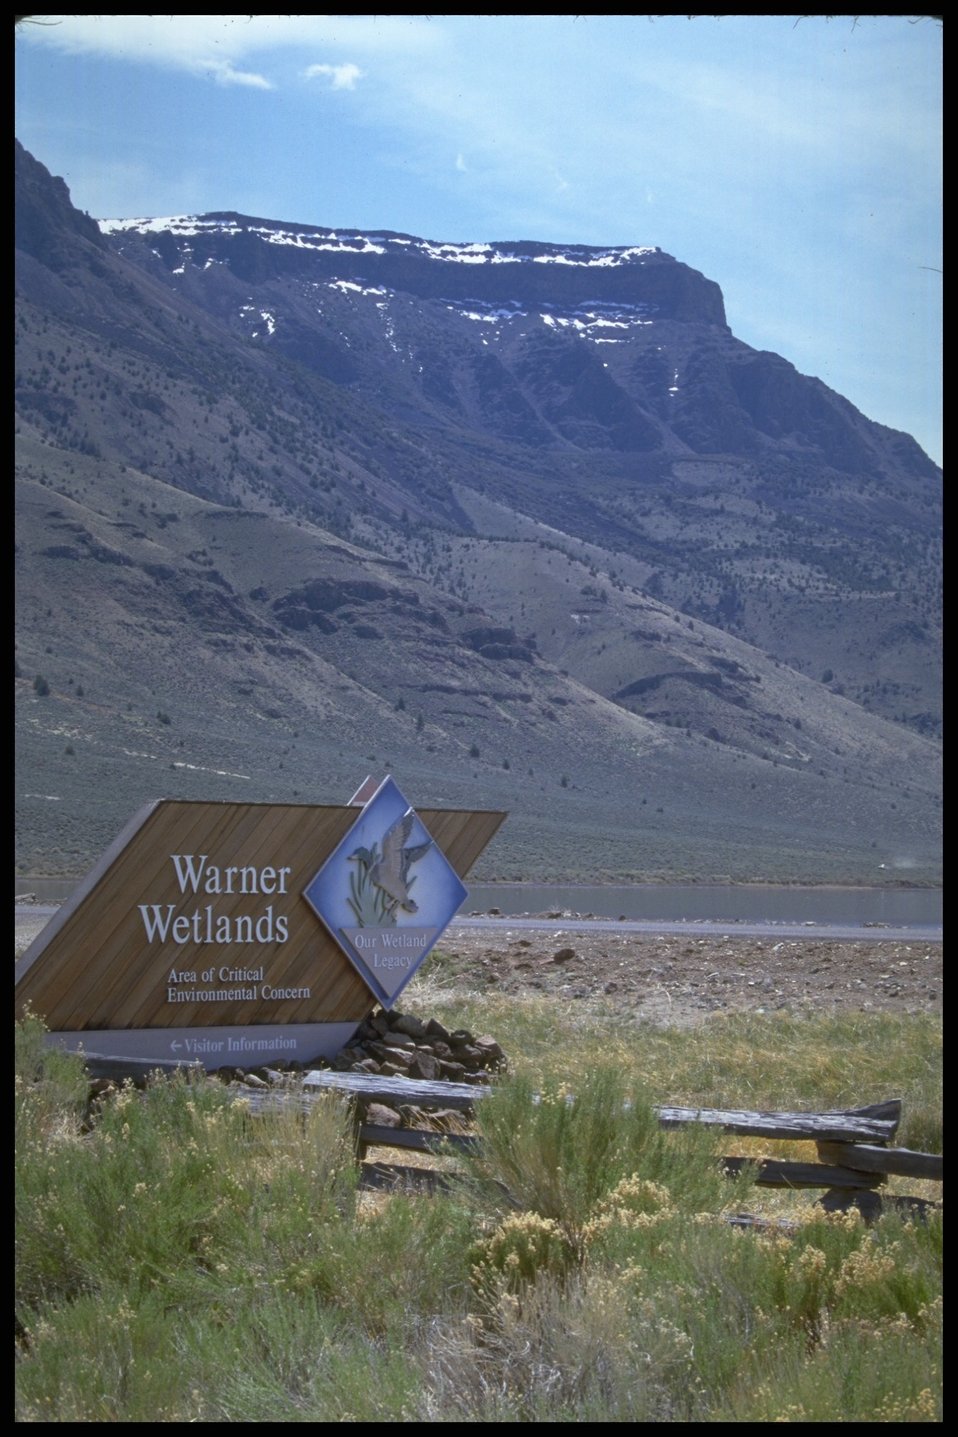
Warner Wet Lands, Lakeview District.